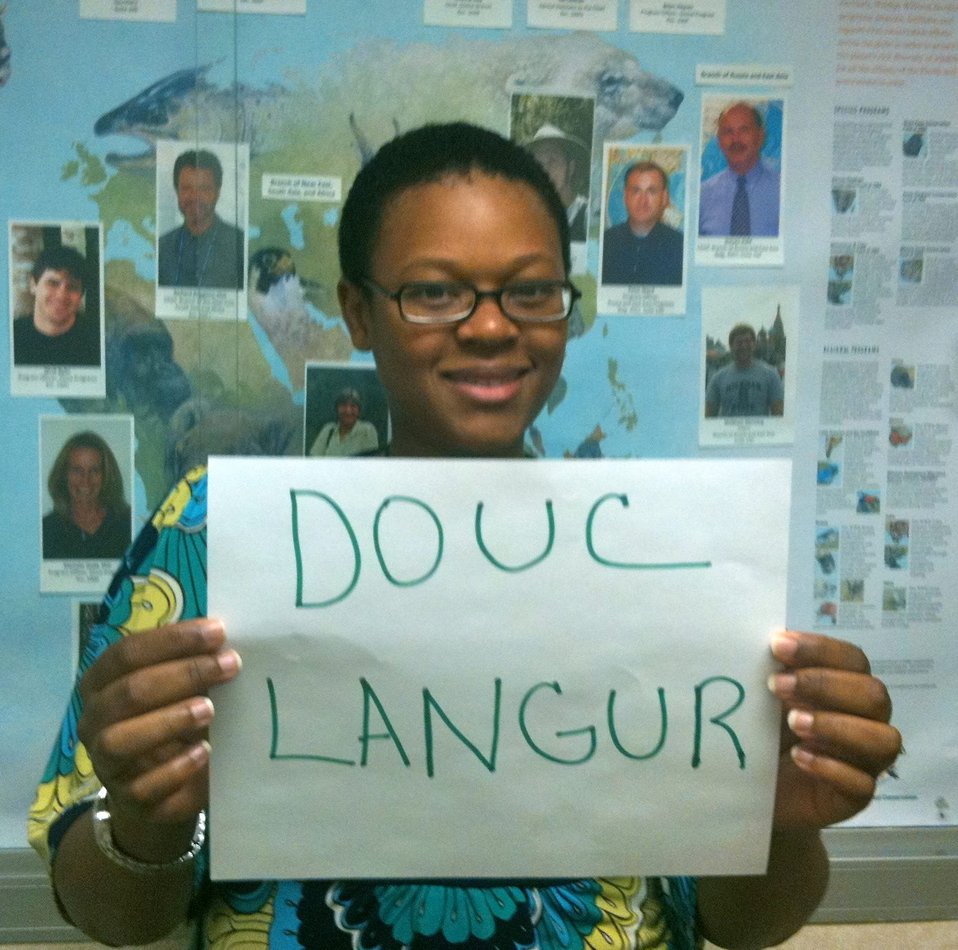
Nikole Tucker, 'Douc Langur,'

International Affairs participates in FFI's In Our Hands campaign